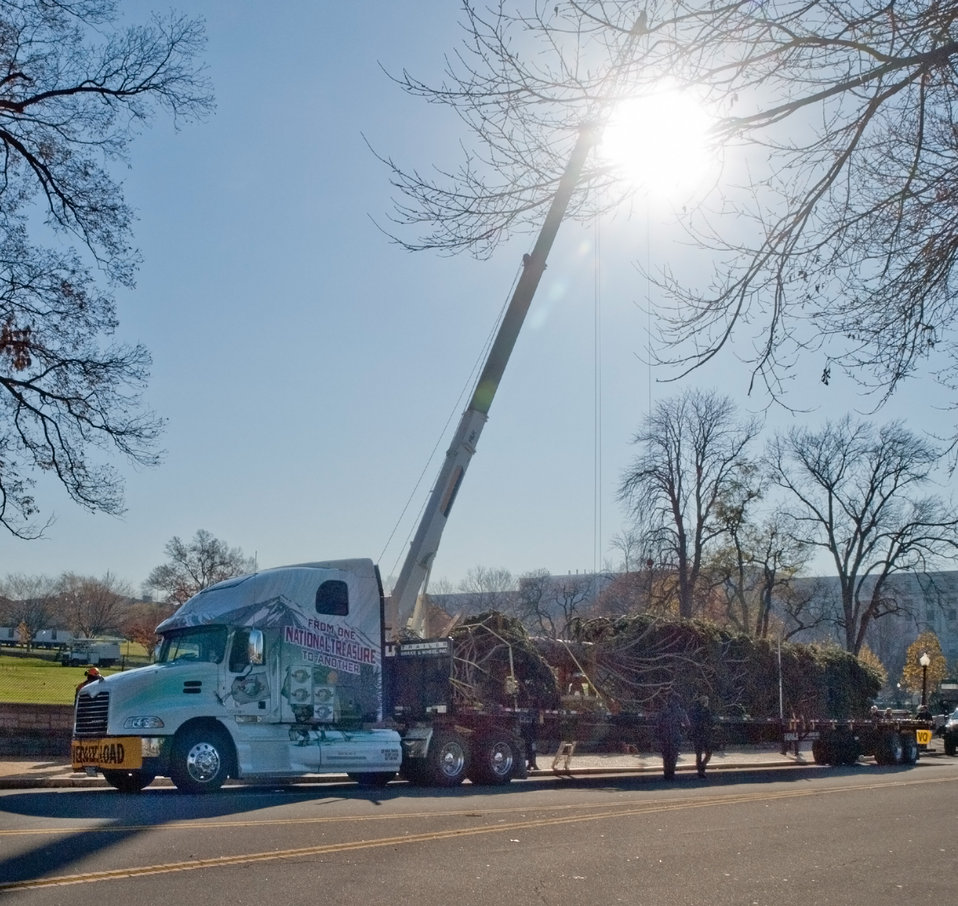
The 2012 Capitol Christmas Tree arrives in Washington, D.C. on Nov.26, 2012. The 73-foot Englemann spruce traveled from the White River National Forest in Colorado.